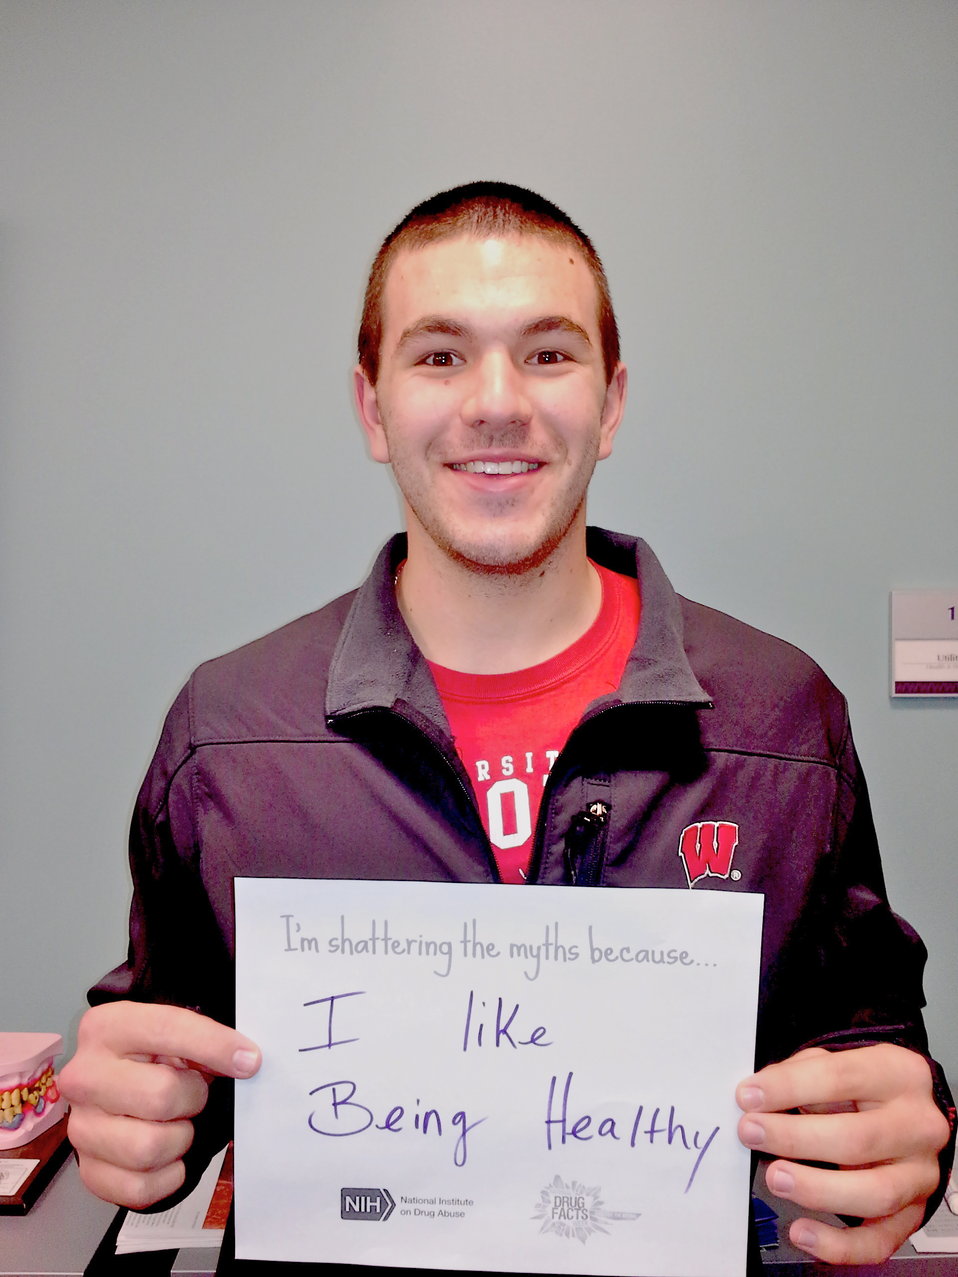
Shattering the Myths campaign in Winona, Minnesota